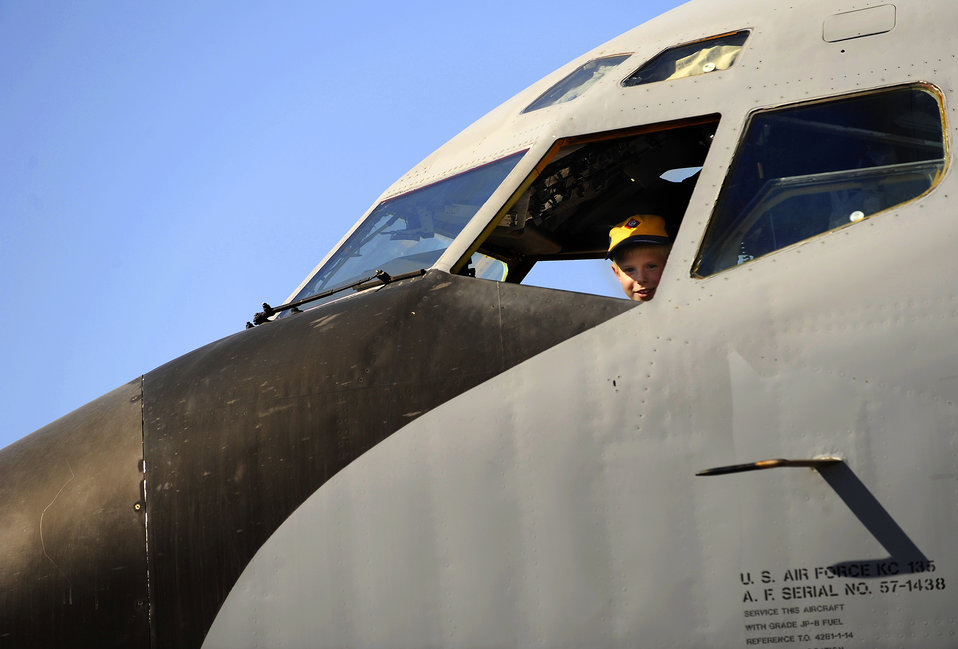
Aerospace exhibition entertains, informs during Air Force Week Los Angeles

Harrison Thomas, 8, a cub scout from Pack 120, Long Beach, Calif., checks out the cockpit of a KC-135 Stratotanker on Nov. 15 at the Wings Over Long Beach Air Expo for Air Force Week Los Angeles. Air Force Week Los Angeles includes flight demonstrations and interactive community events, providing an up close and personal look at the men and women of the Air Force serving worldwide in the defense of freedom. Air Force Week Los Angeles kicked off Nov. 14 and runs until Nov. 21.